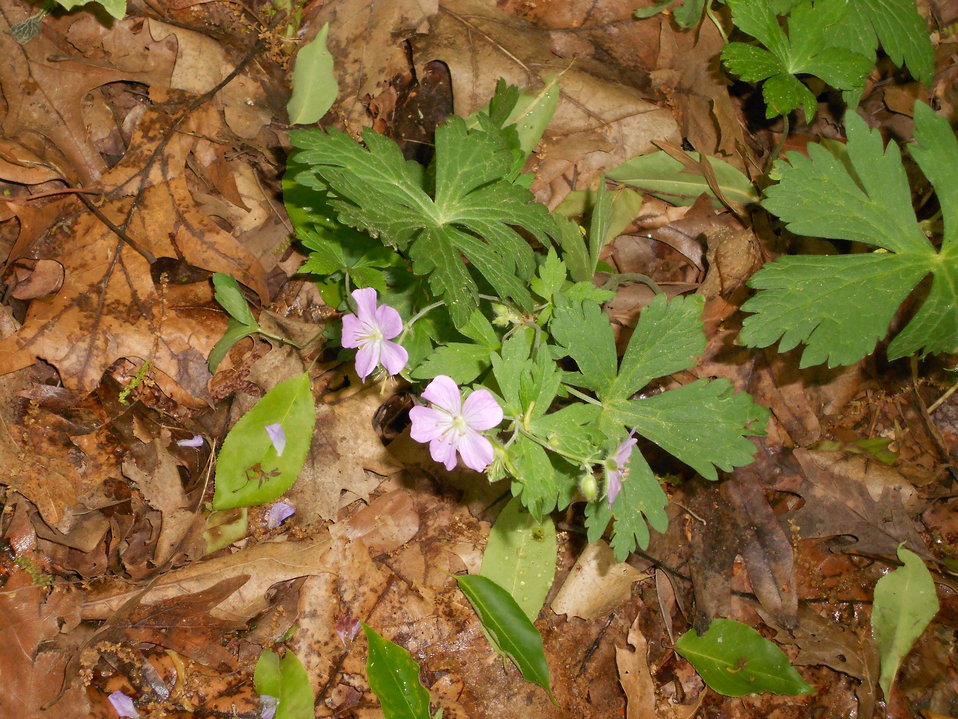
Amazing Native Flowers

One student participating in Students, Nature and Photography (SNAP!) with the Lower Great Lakes Fish and Wildlife Conservation Office was very fascinated by the flowers he found in the woods. Here, he took a picture of a Wild Geranium (Geranium maculatum).